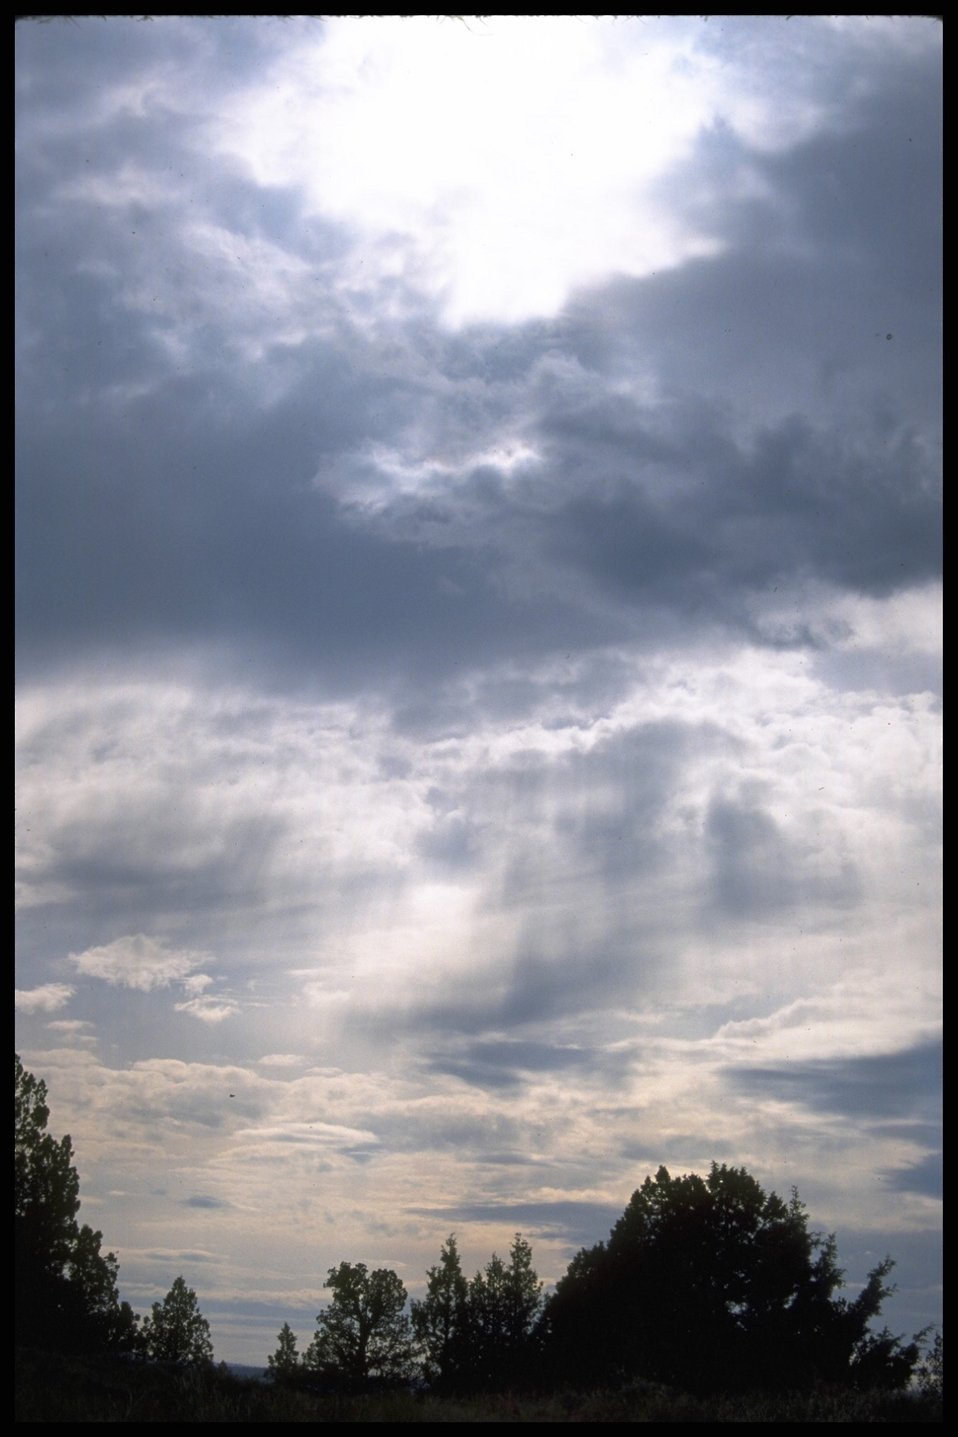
Sun Burst over Lakeview District.